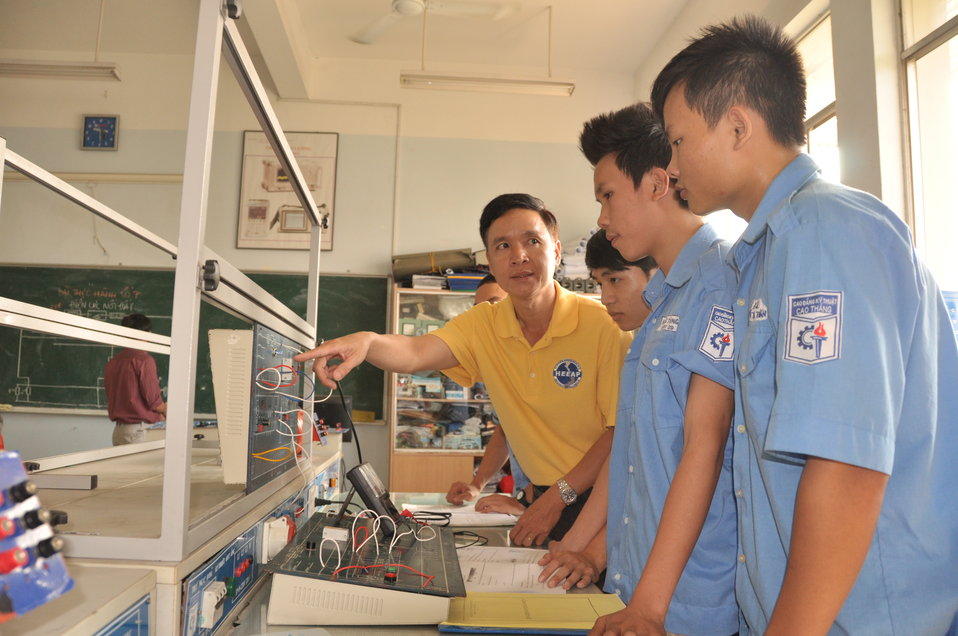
HEEAP Partner, Cao Thang Technical College

Faculty trained with support of HEEAP
Ho Chi Minh City, January 12, 2013